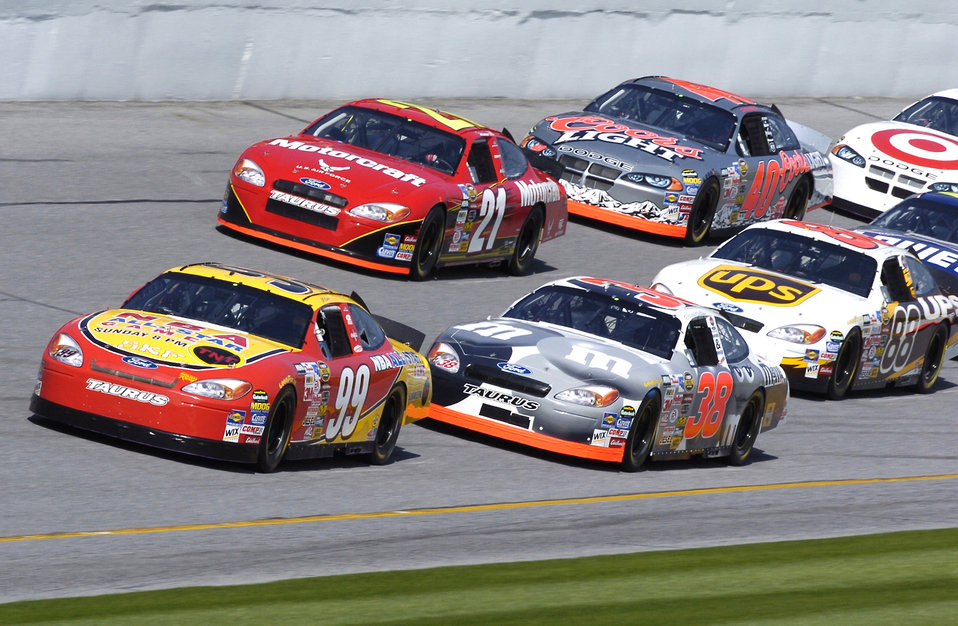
Race to the finish

DAYTONA INTERNATIONAL SPEEDWAY, Fla. -- The Air Force Ford-sponsored Wood Brothers No. 21 Ford Taurus, driven by Ricky Rudd, is shown here during a practice run Feb 11. He is preparing for the Daytona 500 race, which will be held here Feb. 15.